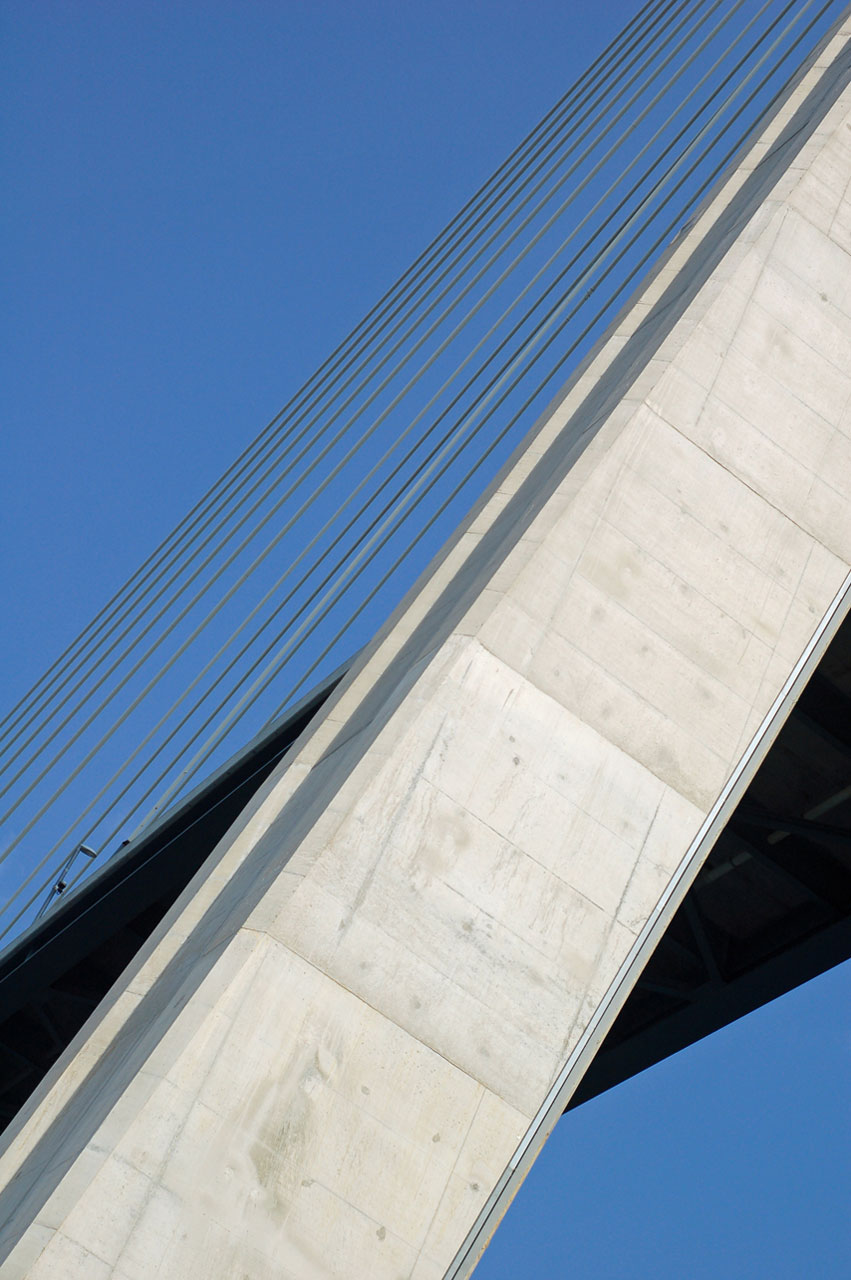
Bridge detail.